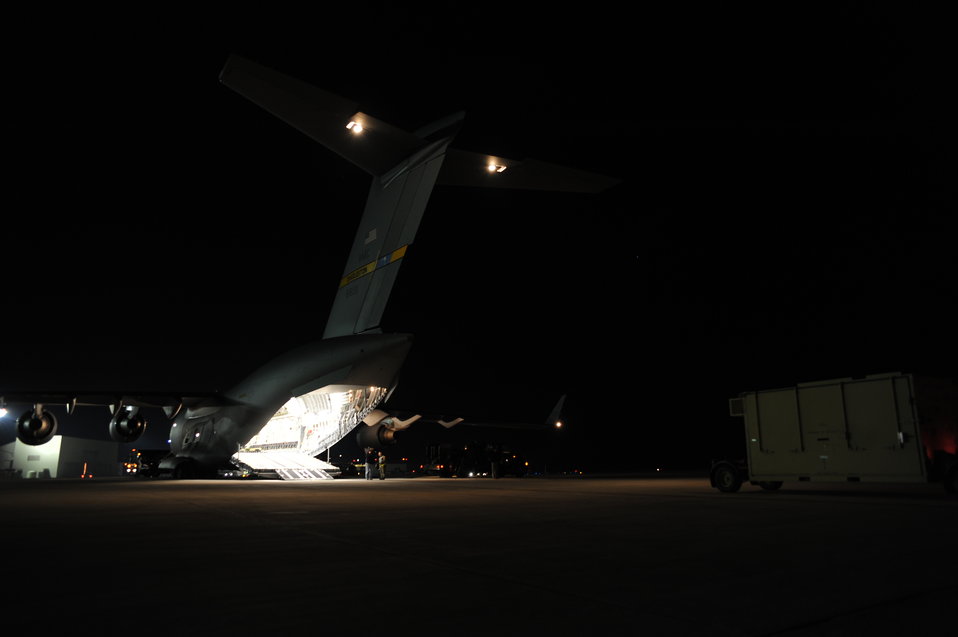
Haiti Humanitarian Effort

Equipment is loaded onto a Charleston AFB C-17 at Joint Base McGuire-Dix-Lakehurst, New Jersey, Jan. 15, 2010. Air Mobility Command is assisting the humanitarian relief effort in Haiti by bringing the assets necessary to run airfield operations, air traffic control, command and control, aerial port, maintenance, and security. Additionally, AMC has aeromedical assets that can take care of and transport injured people to follow-on care. (U.S.Air Force photo/Senior Airman Katie Gieratz)